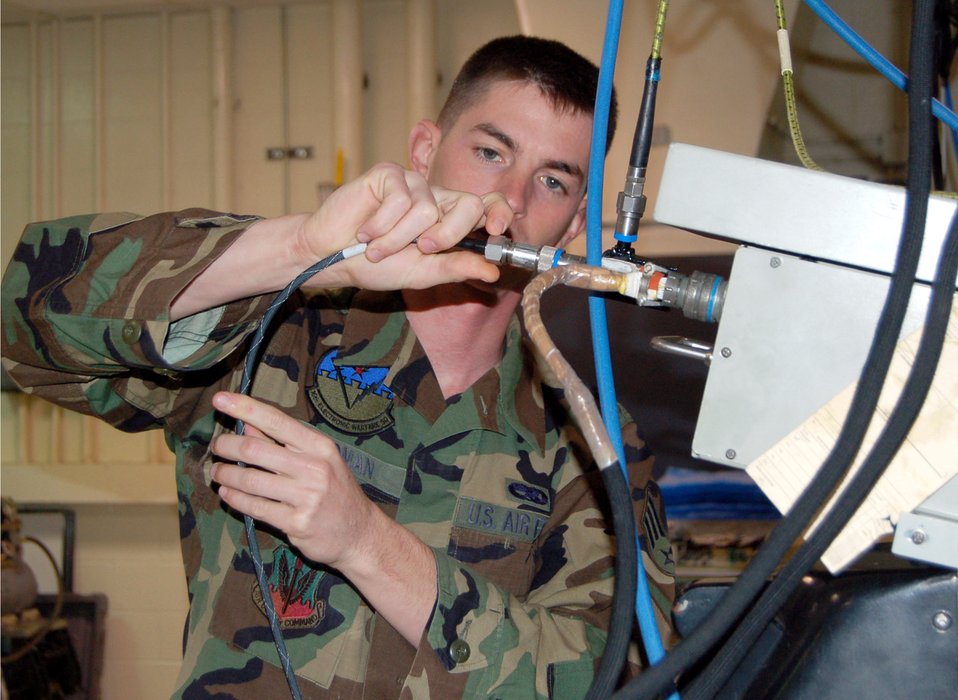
Stepping out of the blue for Army green

Senior Airman Mike Goldman tightens a cable on an electronic countermeasures pod Nov. 20. Airman Goldman, a 16th Electronic Warfare Squadron journeyman at Eglin Air Force Base, Fla., is leaving the Air Force Dec. 29 to join the Army through